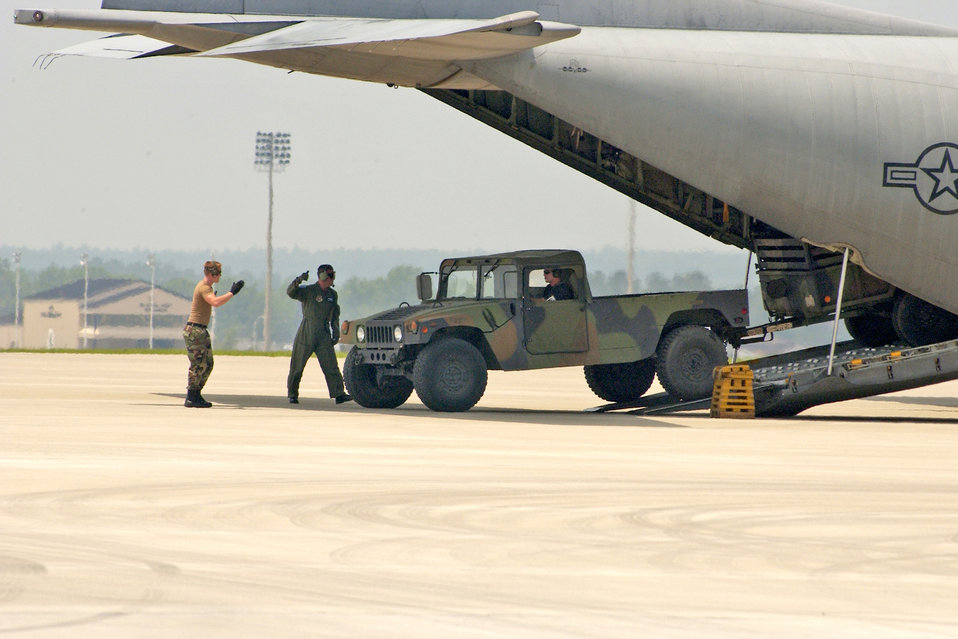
Off to the rodeo

POPE AIR FORCE BASE, N.C. -- Airmen preparing for the Air Mobility Rodeo load a Humvee onto a C-130 Hercules here June 15. The rodeo begins June 20 at McChord Air Force Base, Wash., and is focused on improving worldwide air mobility forces' professional core abilities. The competition events range from aeromedical evacuation mission elements and airdrops to assault landings and maintenance operations.